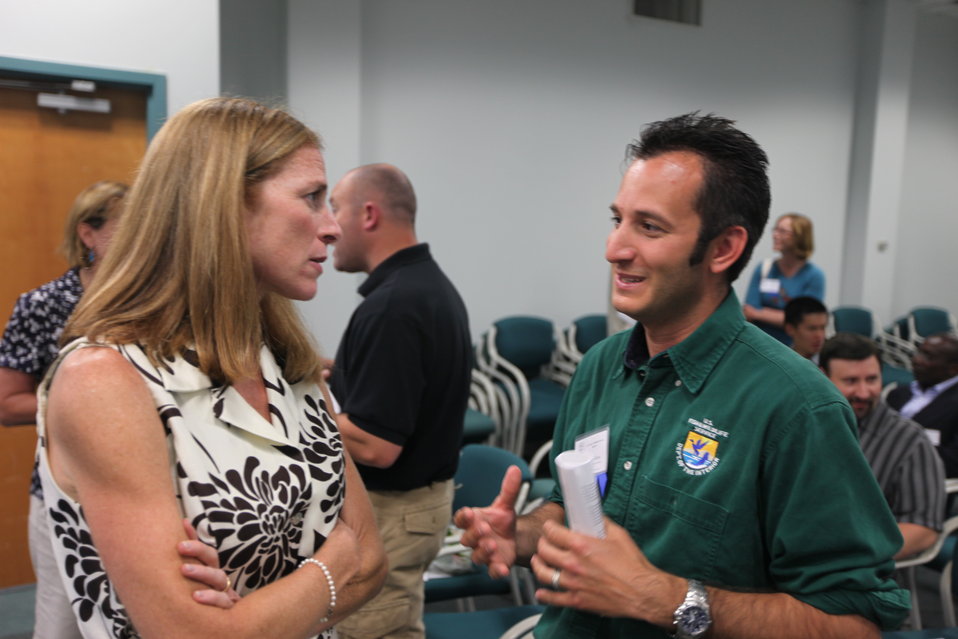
Wendi Weber and Juancarlos Giese

Regional Director Wendi Weber and Unsung Hero Award recipient Juancarlos Giese talk before the ceremony.